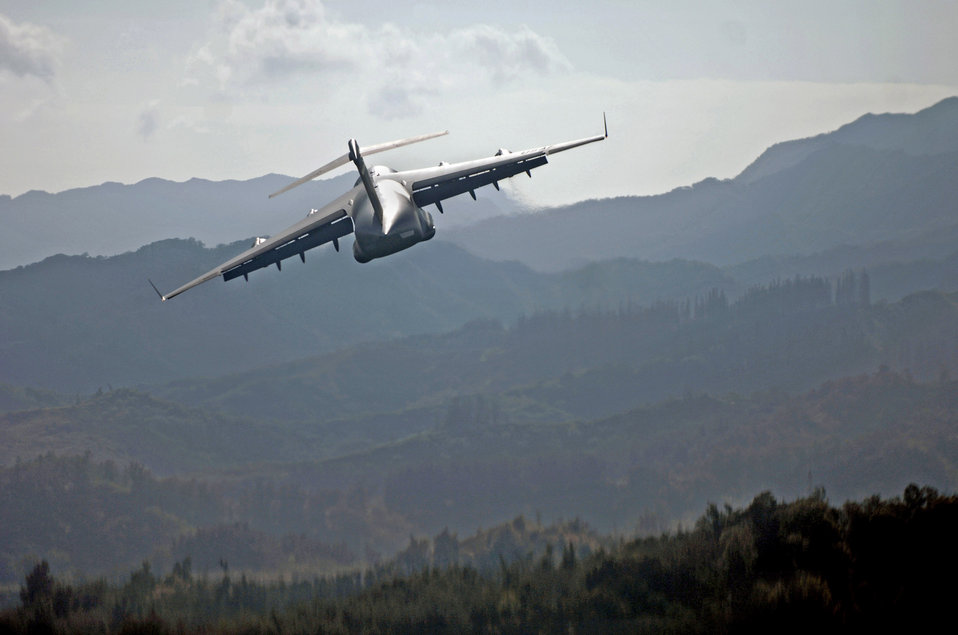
Hickam's C-17s deliver anywhere

A C-17 Globemaster III pulls up over the Kahuku Training Range Jan. 7 after conducting a dry pass for an airdrop over Oahu, Hawaii. The C-17s and their crews, from the 535th Airlift Squadron, Hickam Air Force Base, Hawaii, are conducting two-ship airdrops at the Kahuku Training range as part of their currency training.